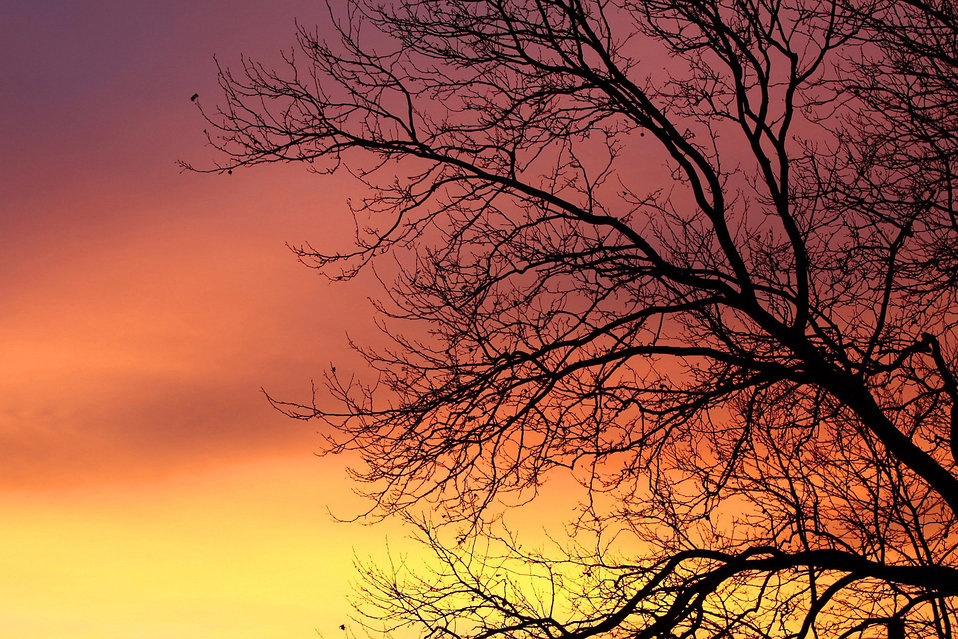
Neighborhood sky

Sky colors at daybreak.